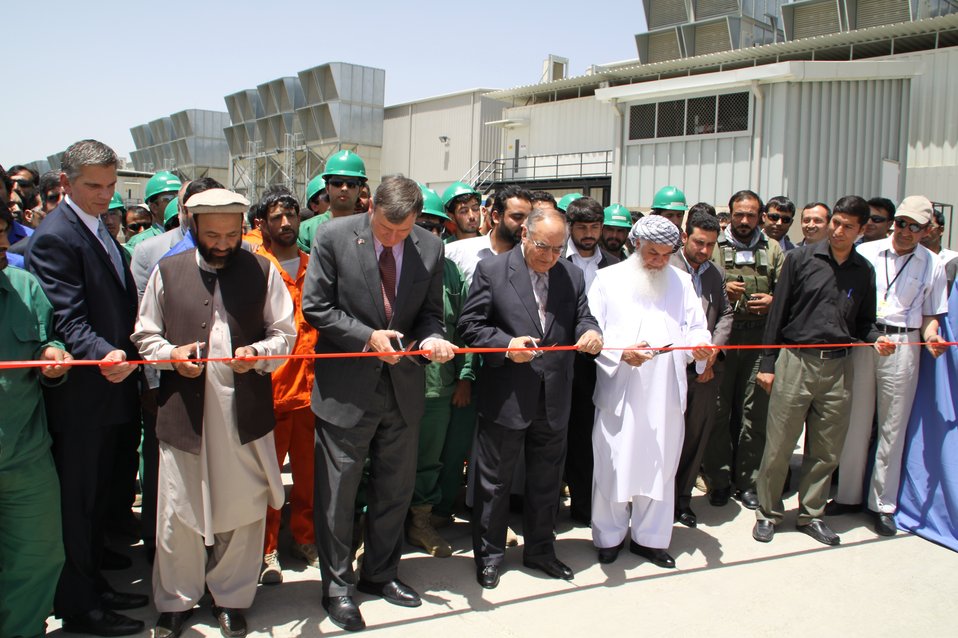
105 MW Tarakhil Power Plant Handover